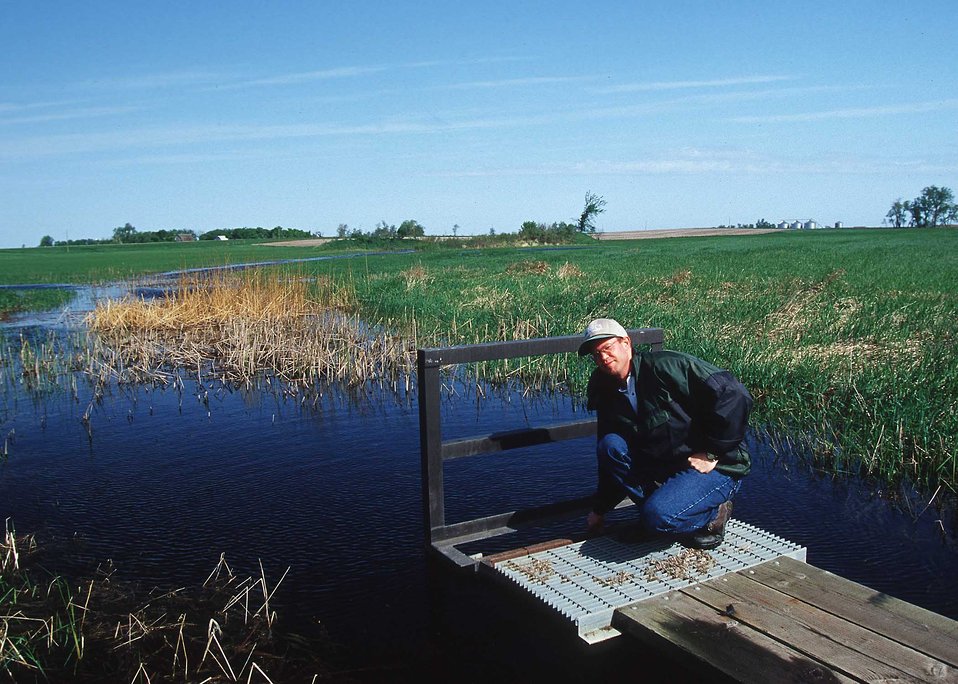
Water control structure installed for wetland restoration in the prairie pothole region of South Dakota. The structure allows the landowner to regulate the depth of the water in the wetland thereby providing optimum habitat for water dependent wildlife.